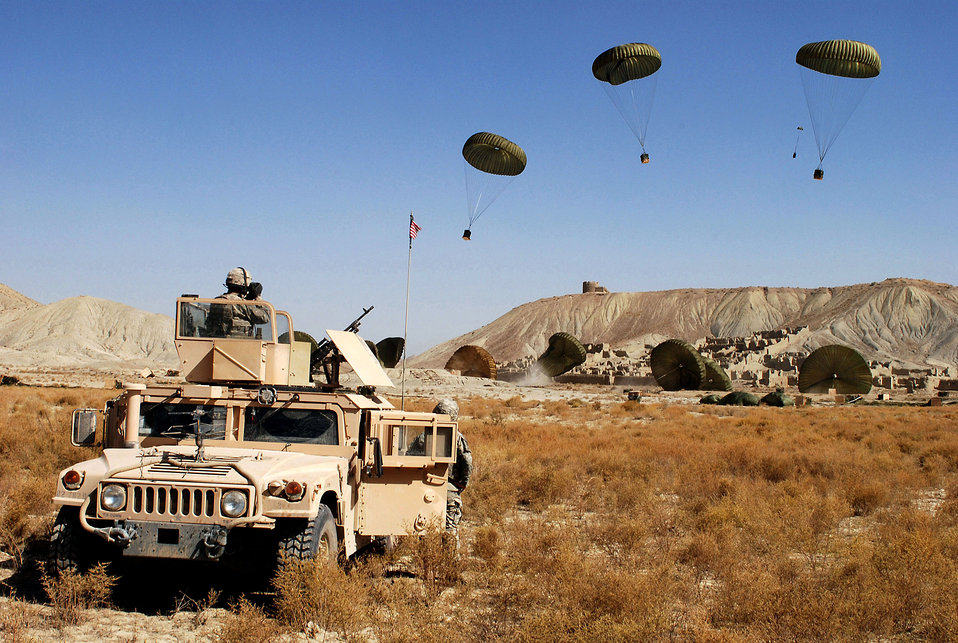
C-17 crews make record airdrop

Paratroopers from the 782nd Brigade Support Battalion, 4th Brigade Combat Team, 82nd Airborne Division watch as C-17 Globemaster IIIs air drop combat cargo bundles carrying food and water in Paktika Province, Afghanistan, October 11.